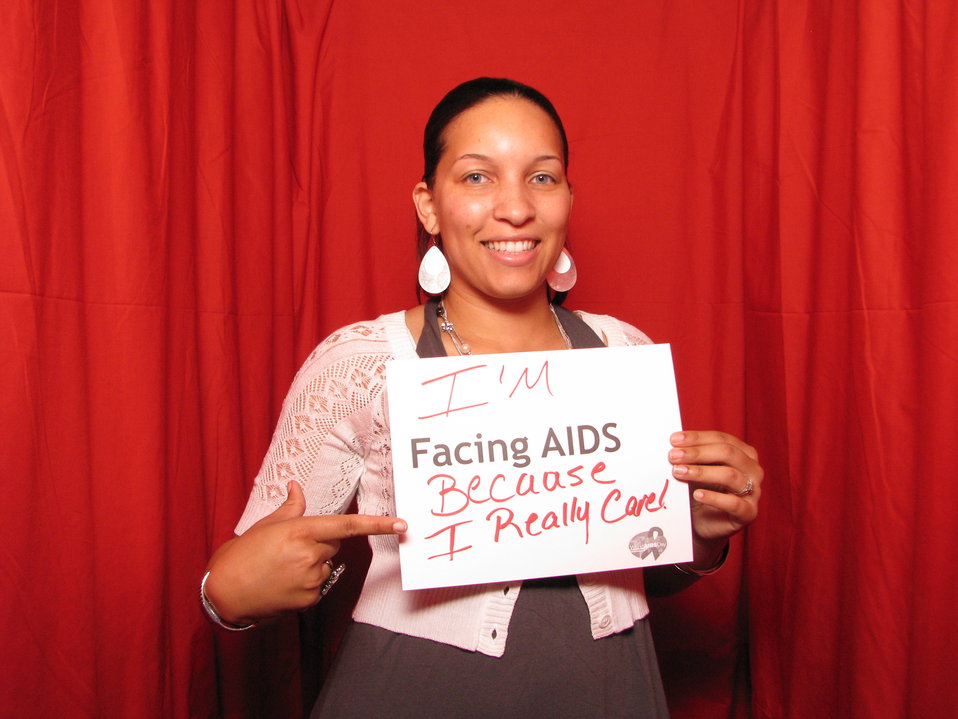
I'm FACING AIDS because I really care!

From the AIDS.gov photo booth at the U.S. Conference on AIDS, September 2010 (Orlando, FL).